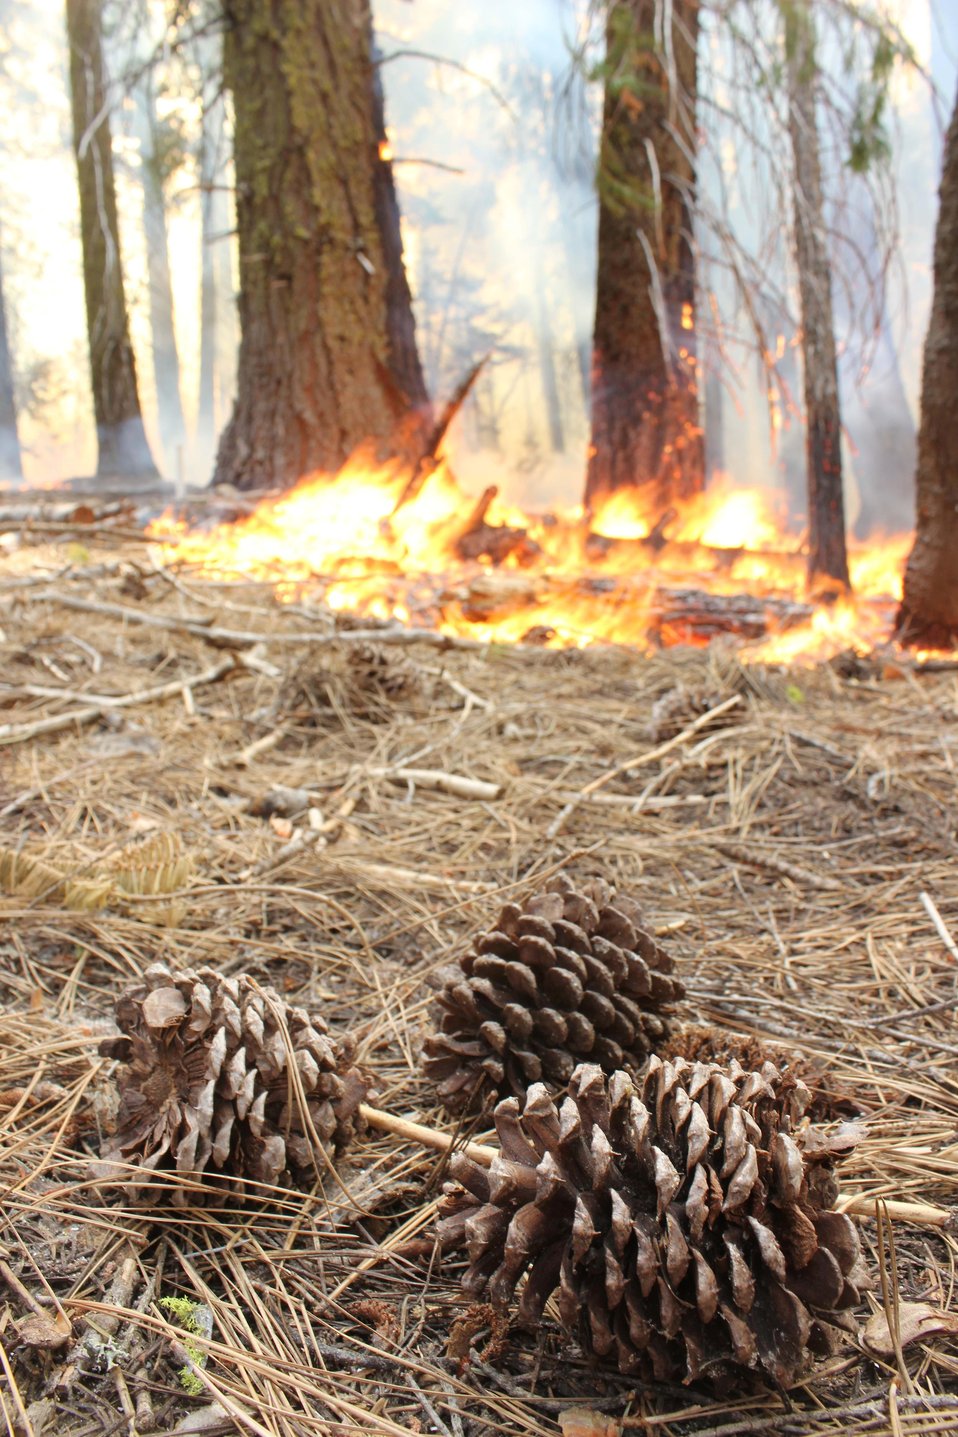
The seeds in of the Red Pine tree are released due to the Rim Fire. Red Pine tree seeds are stored in closed in (serotinous) cones for many years until an environmental cue triggers the cones to open, releasing the seeds. The most common form of serotiny is pyriscence, in which a resin binds the cones shut until melted by a forest fire. The Rim Fire in the Stanislaus National Forest near in California began on Aug. 17, 2013 and is under investigation. The fire has consumed approximately 235,841 acres and is 70% contained.